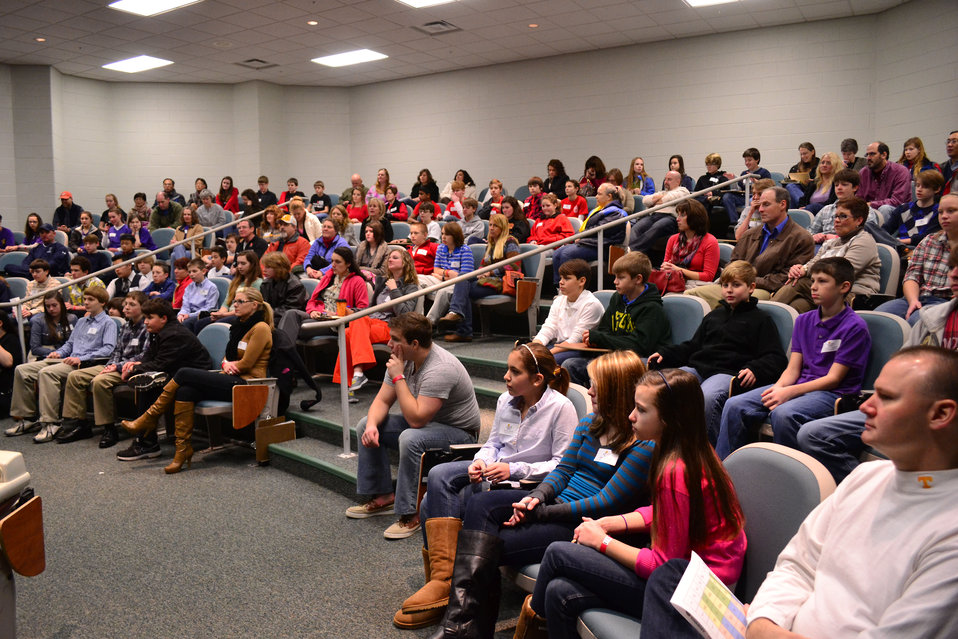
DOE Tennessee Middle School Science Bowl Oak Ridge

13-008 DOE photo Lynn Freeny DOE Tennessee Middle School Scence Bowl 2-2-2013 Oak Ridge Tennessee